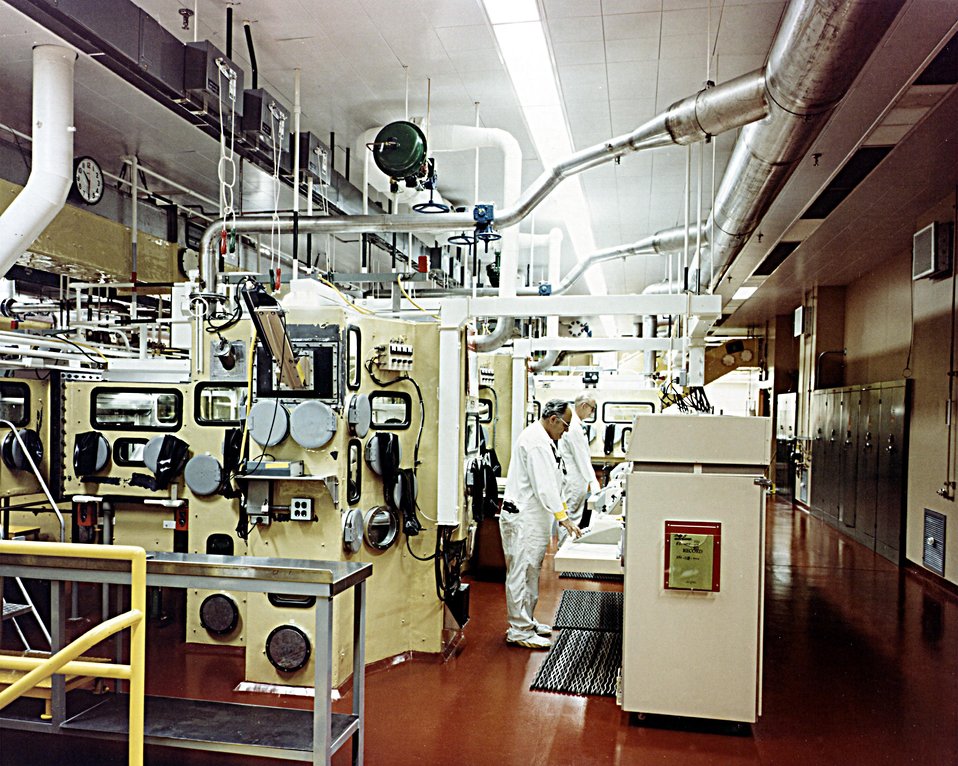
COMPUTERIZED LATHE OPERATIONS INSURE THAT EACH COMPONENT IS MACHINED TO MINUTE SPECIFICATIONS (BUILDING 707).

ALL PLUTONIUM OPERATIONS AT THE PLANT ARE CARRIED OUT IN HIGHLY SPECIALIZED FACILITIES, PROTECTING THE EMPLOYEES AND THE SURROUNDING POPULATION AND ENVIRONMENT.